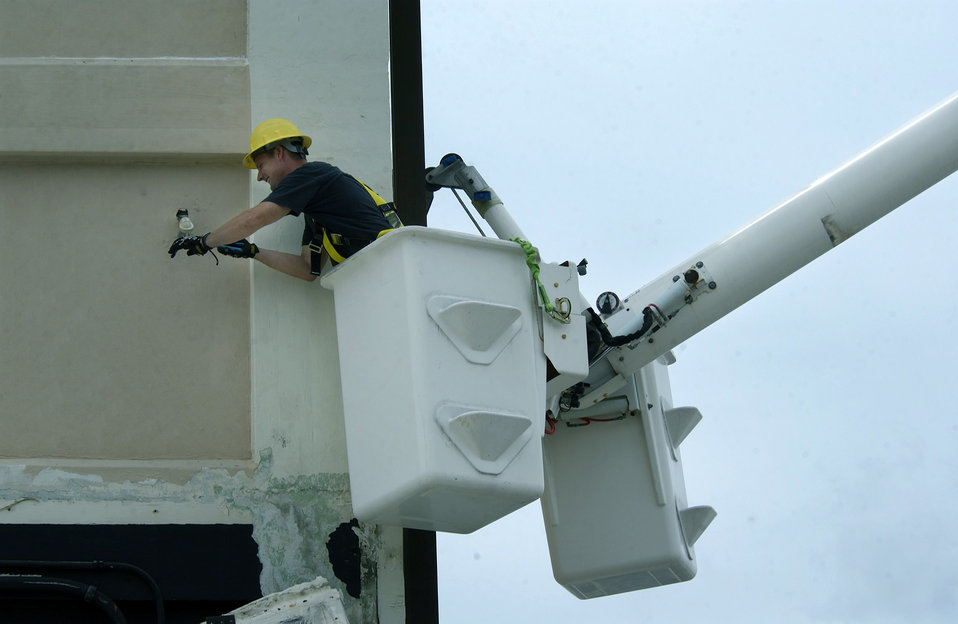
Hurricane Frances

PATRICK AIR FORCE BASE, Fla. -- Staff Sgt. Chris Saberniak isolates a broken power line Sept. 6 after Hurricane Frances hit the base and the surrounding community. Sergeant Saberniak is an electrician with the 45th Civil Engineer Squadron.